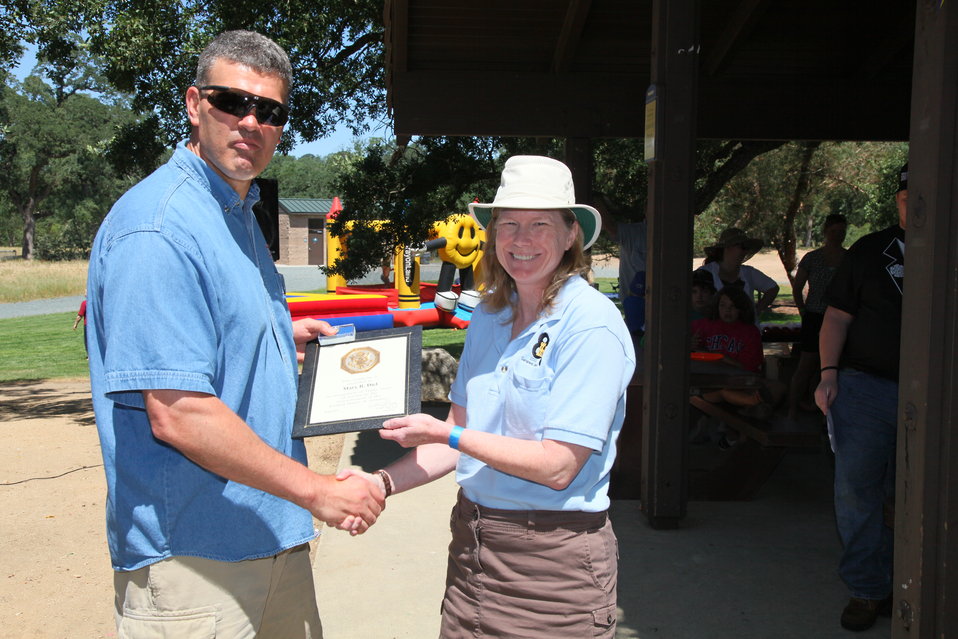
2011 Annual Picnic